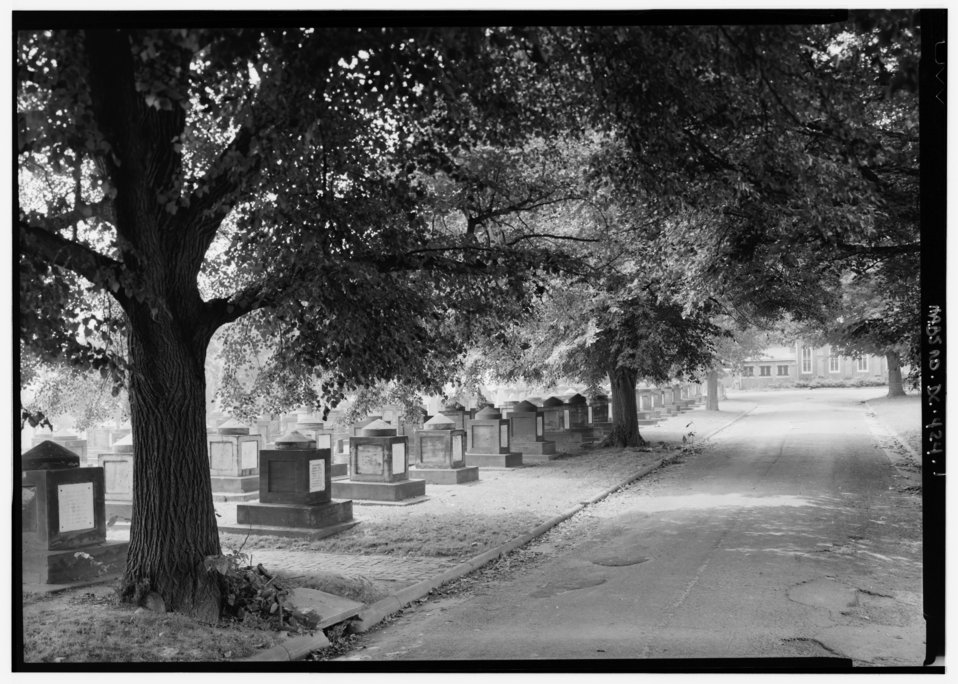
Congressional Cemetery

View of cenotaphs at the Congressional Cemetery.